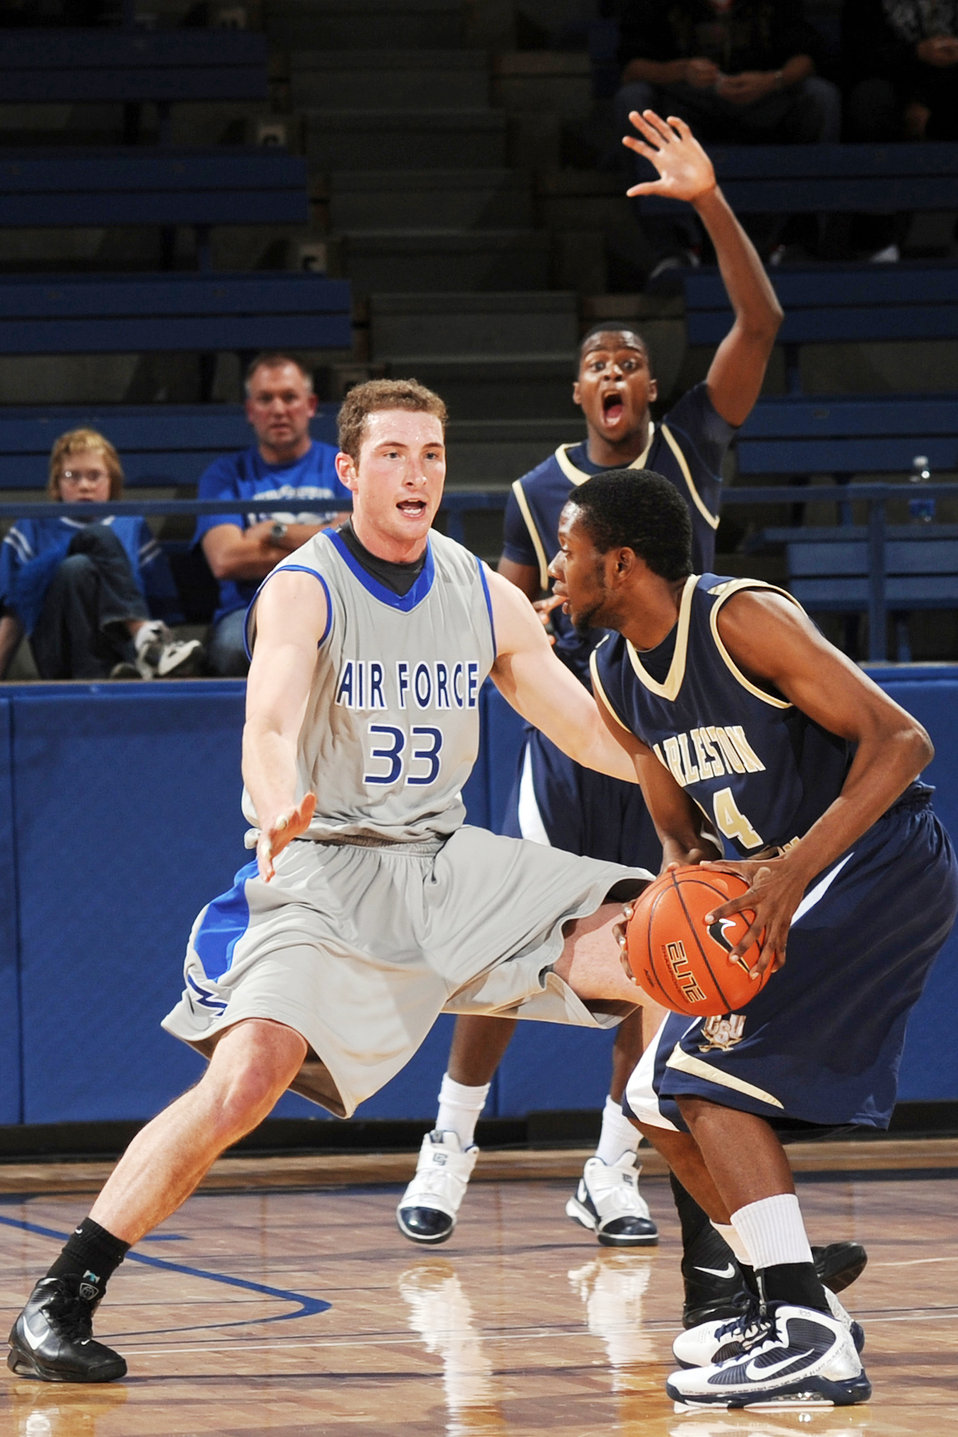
Air Force Academy

Senior center Mike McLain defends against the Buccaneers? Stanley Honorat during the Air Force-Charleston game at the Air Force Academy?s Clune Arena Nov. 28, 2009. The Falcons won 68-58 to improve to 3-1. McLain had seven points and four rebounds.